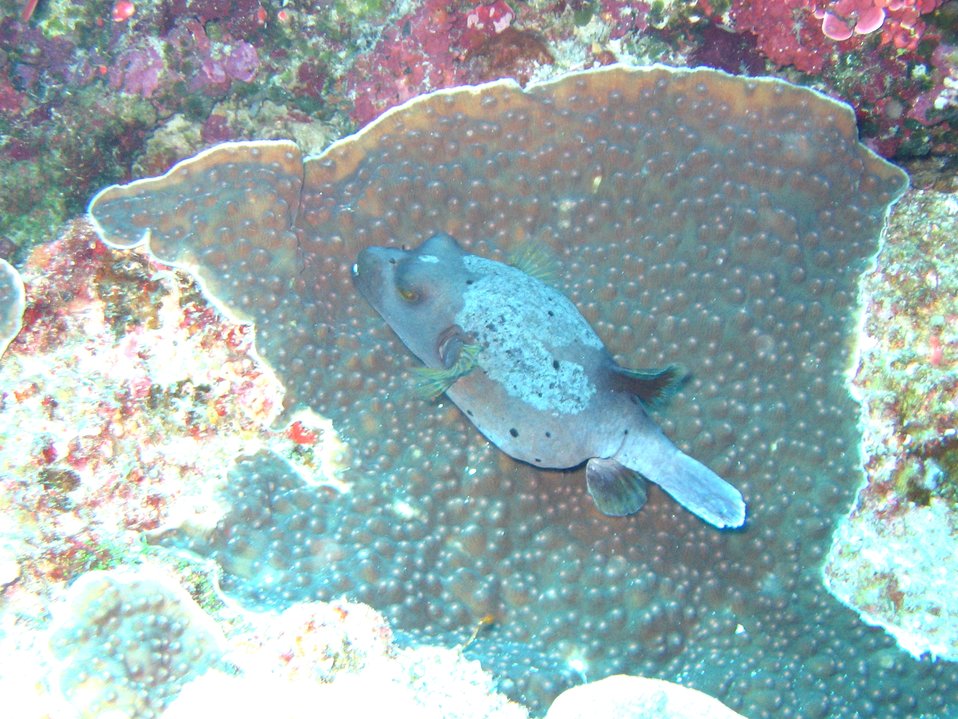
Blackspotted puffer (Arothron nigropuctatus)